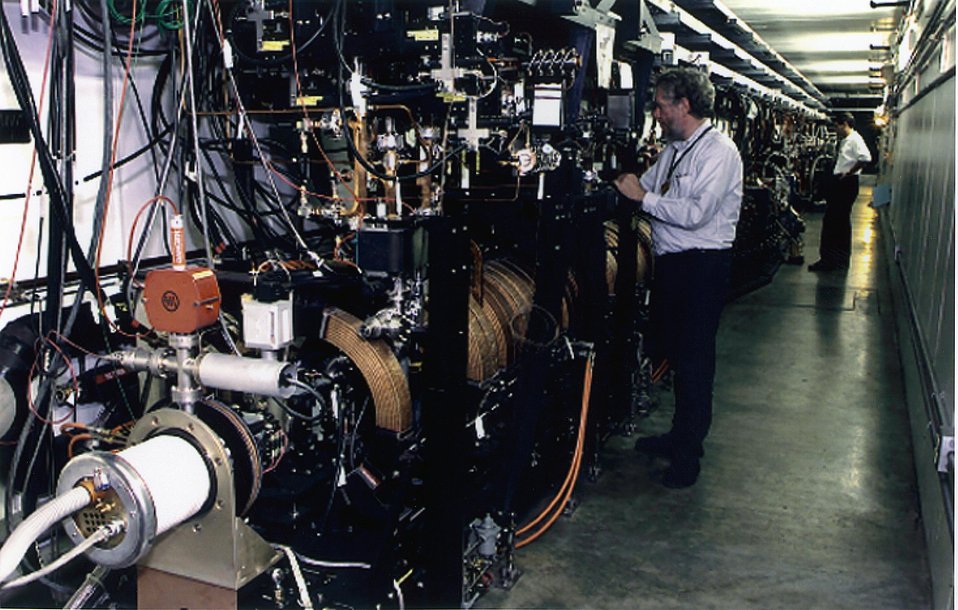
THE NEXT LINEAR TEST ACCELERATOR AT LAWRENCE LIVERMORE NATIONAL LABORATORY.

THE NEXT LINEAR COLLIDER (NLC) IS BEING DEVELOPED BY A COLLABORATION OF FOUR DOE LABORATORIES- STANFORD LINEAR ACCELERATOR CENTER (SLAC), LAWRENCE LIVERMORE, AND LAWRENCE BERKELEY NATIONAL LABORATORIES, AND FERMI NATIONAL ACCELERATOR LABORATORY (FNAL OR FERMILAB). PHYSICISTS BELIEVE THAT THE NLC, AND OTHER EXTREME HIGH-ENERGY PARTICLE ACCELERATORS WILL LEAD THE WAY IN ANSWERING SOME OF THE MOST FUNDAMENTAL QUESTIONS OF SCEINCE, SUCH AS HOW PARTICLES ACQUIRE MASS, THE STRUCTURE OF SPACE-TIME AND WHAT CONSTITUTES THE DARK MATTER OF THE UNIVERSE.